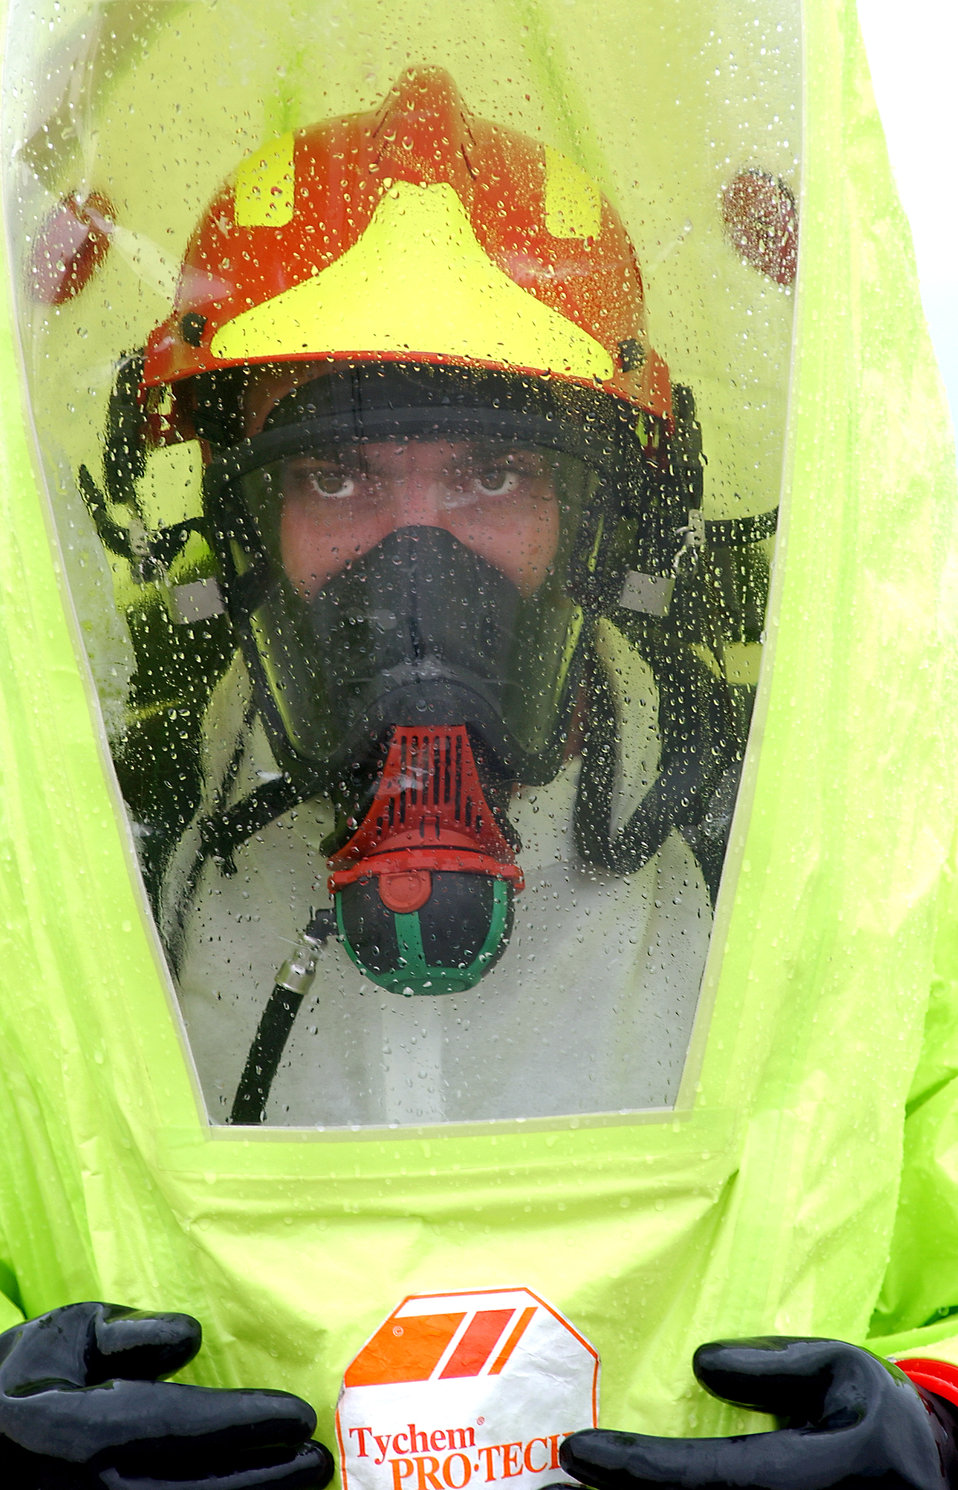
Joint training develops seamless response

A member of the Pordenone chemical accident response team participates in an American-Italian exercise on Thursday, May 4, 2006. Responders from various Italian fire and police departments and medical facilities joined those from the 31st Fighter Wing fire department, hospital and security forces at Aviano Air Base, Italy, for a mass accident exercise. The purpose of the exercise is to develop a seamless response capability between Italian and American emergency professionals.